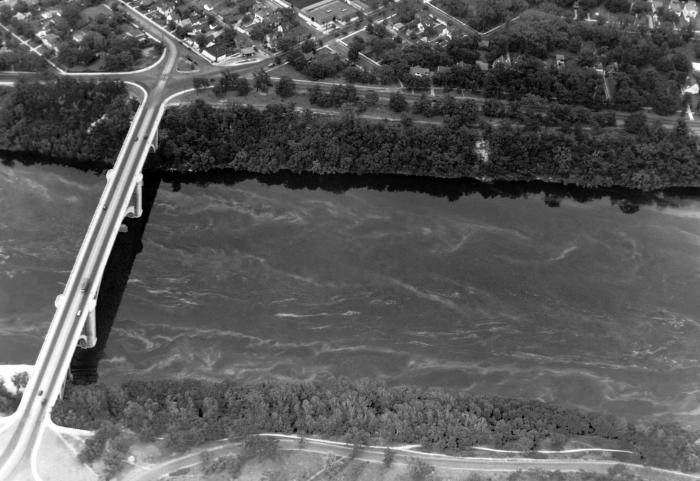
In this historic aerial view of the Mississippi River, the Franklin Avenue Bridge is seen at left just outside Minneapolis, Minnesota taken on June 7, 1933. It was taken during a Minnesota Department of Health study of the public bathing and recreation areas along the river.